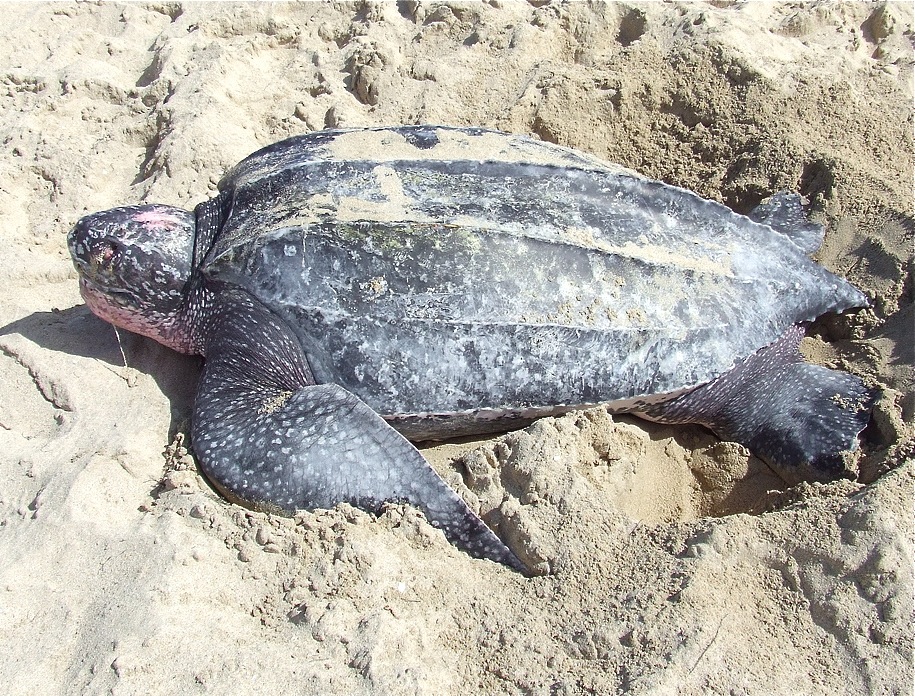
1st leatherback sea turtle nest ...

... was discovered March 2, 2012 at Archie Carr National Wildlife Refuge in FL.
This photo of an endangered leatherback sea turtle laying eggs was taken in 2011 at Sandy Point National Wildlife Refuge in the U.S. Virgin Islands.